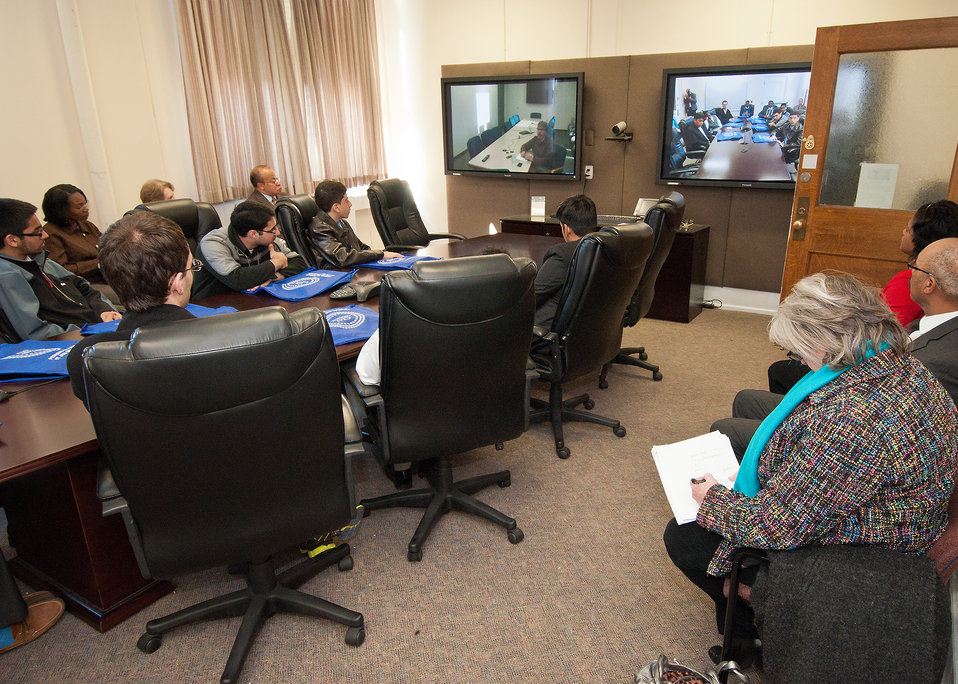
Fairfax Public Schools, Fairfax, VA Career Experience Specialist Genie Williford and students from Edison Academy in Fairfax, VA listen to U.S. Department of Agriculture (USDA) Office of Chief Information Officer (OCIO) Acting Associate Chief Data Center, National Information Technology Center, Denver CO James Stevens via a video link from USDA in Washington, D.C. during the USDA OCIO Information Technology (IT) Job Shadow Day held by the USDA OCIO to introduce local high school students to careers in information technology in Washington, D.C. on Tuesday, Apr. 2, 2013.